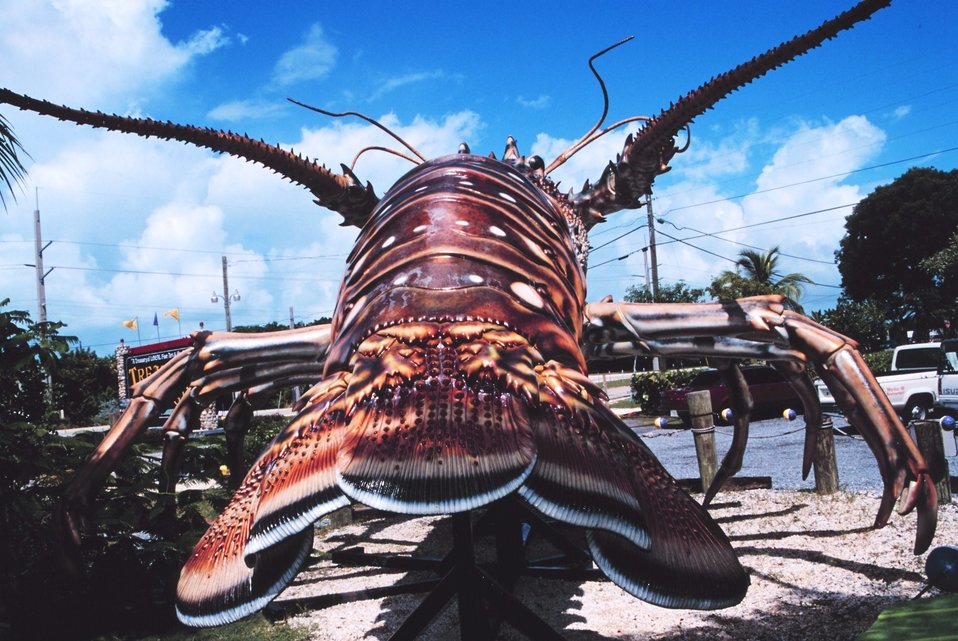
A giant spiny lobster is an attraction at Treasure Village